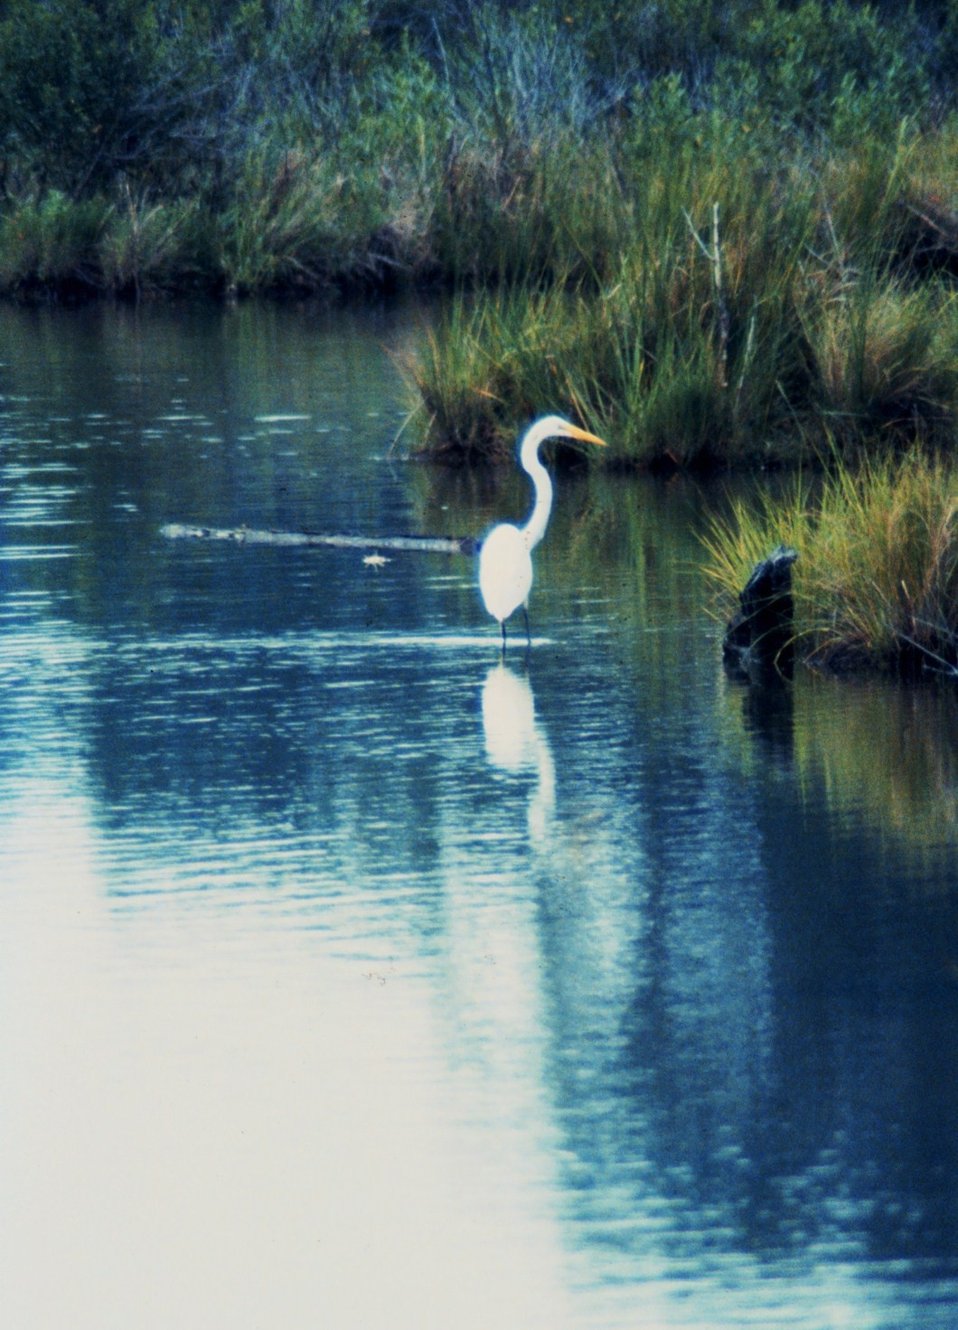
A Great Egret.